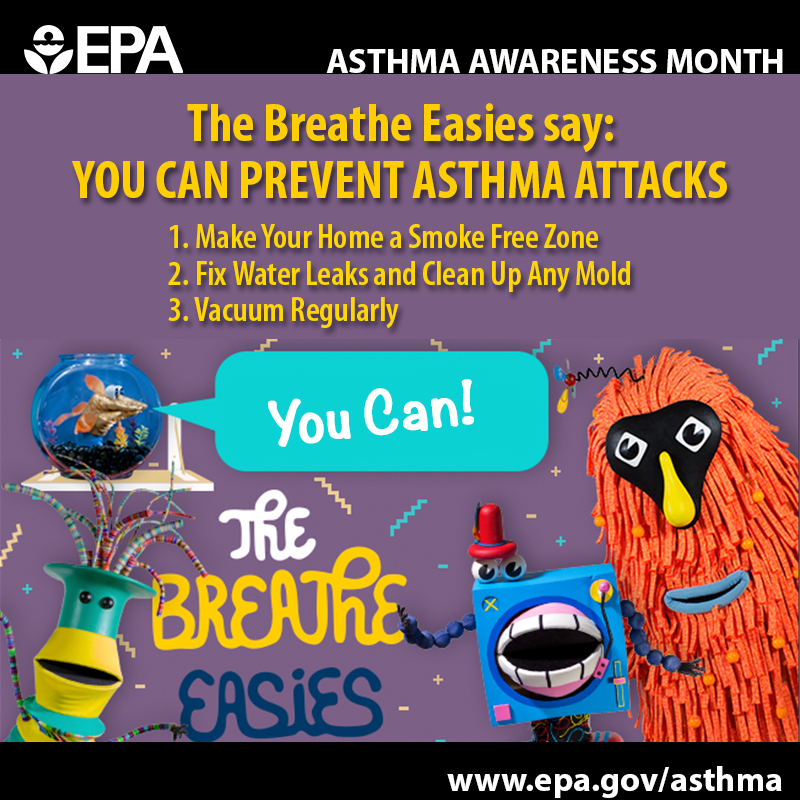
You Can Prevent Asthma Attacks

You can prevent #asthma attacks: make your home a smoke free zone, fix water leaks, clean up any mold, and vacuum regularly. youtu.be/bgWtEeshk0Y